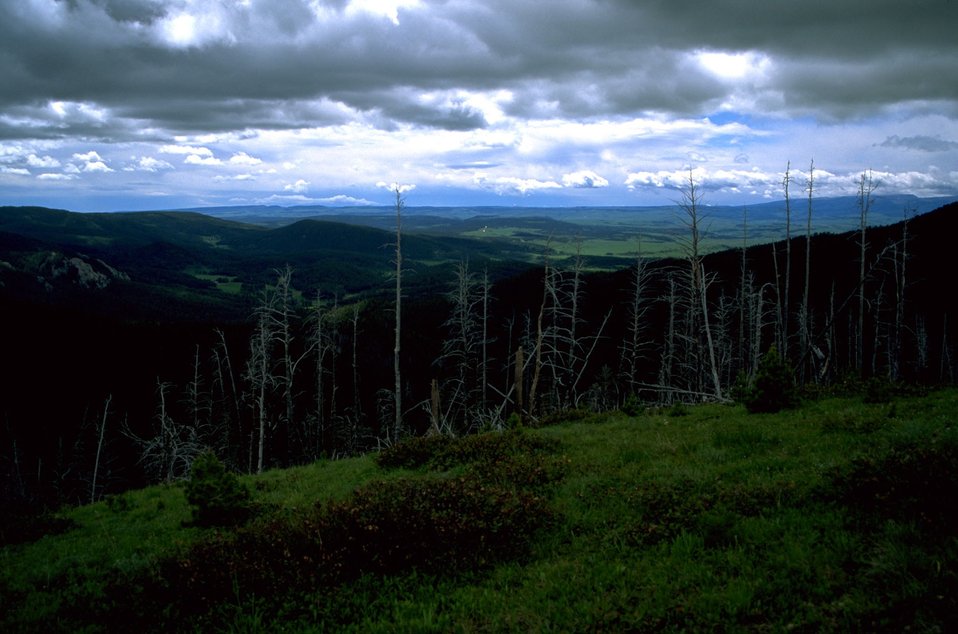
Interesting cloud formations over a valley in the Judith Mountains